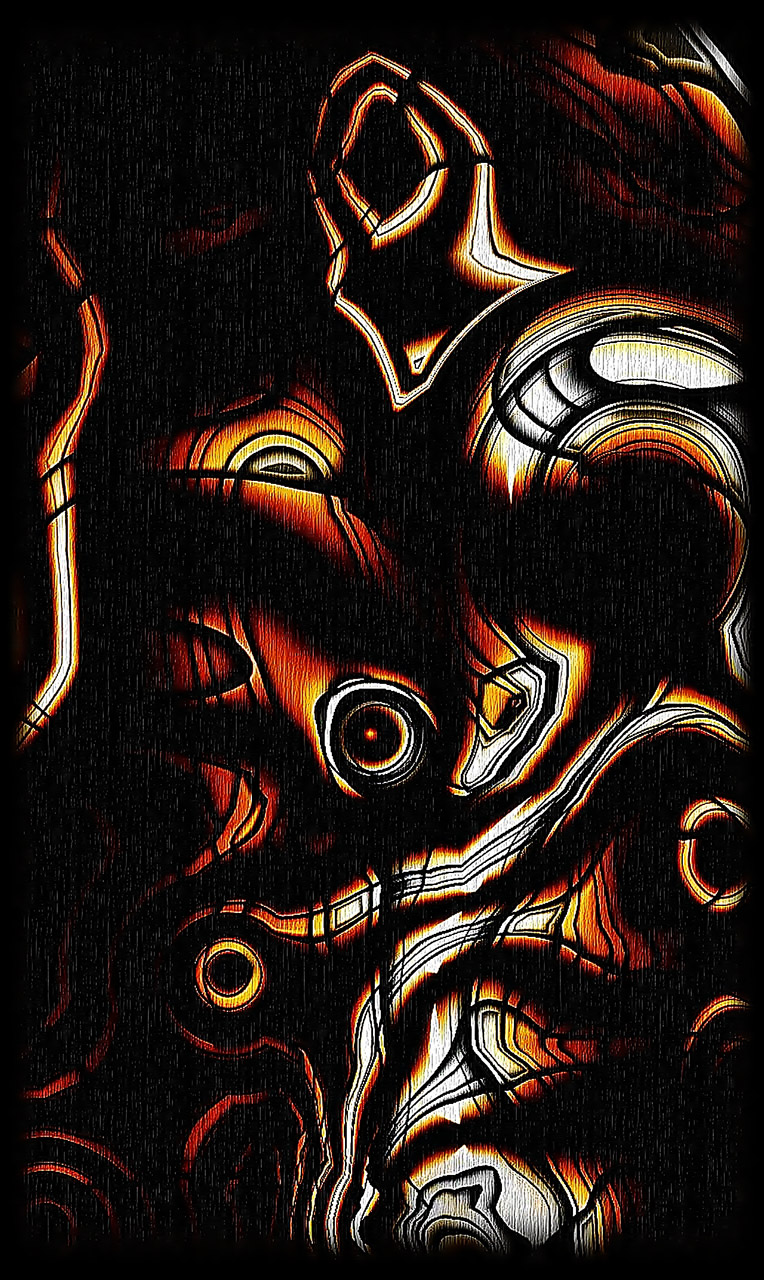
Depression.